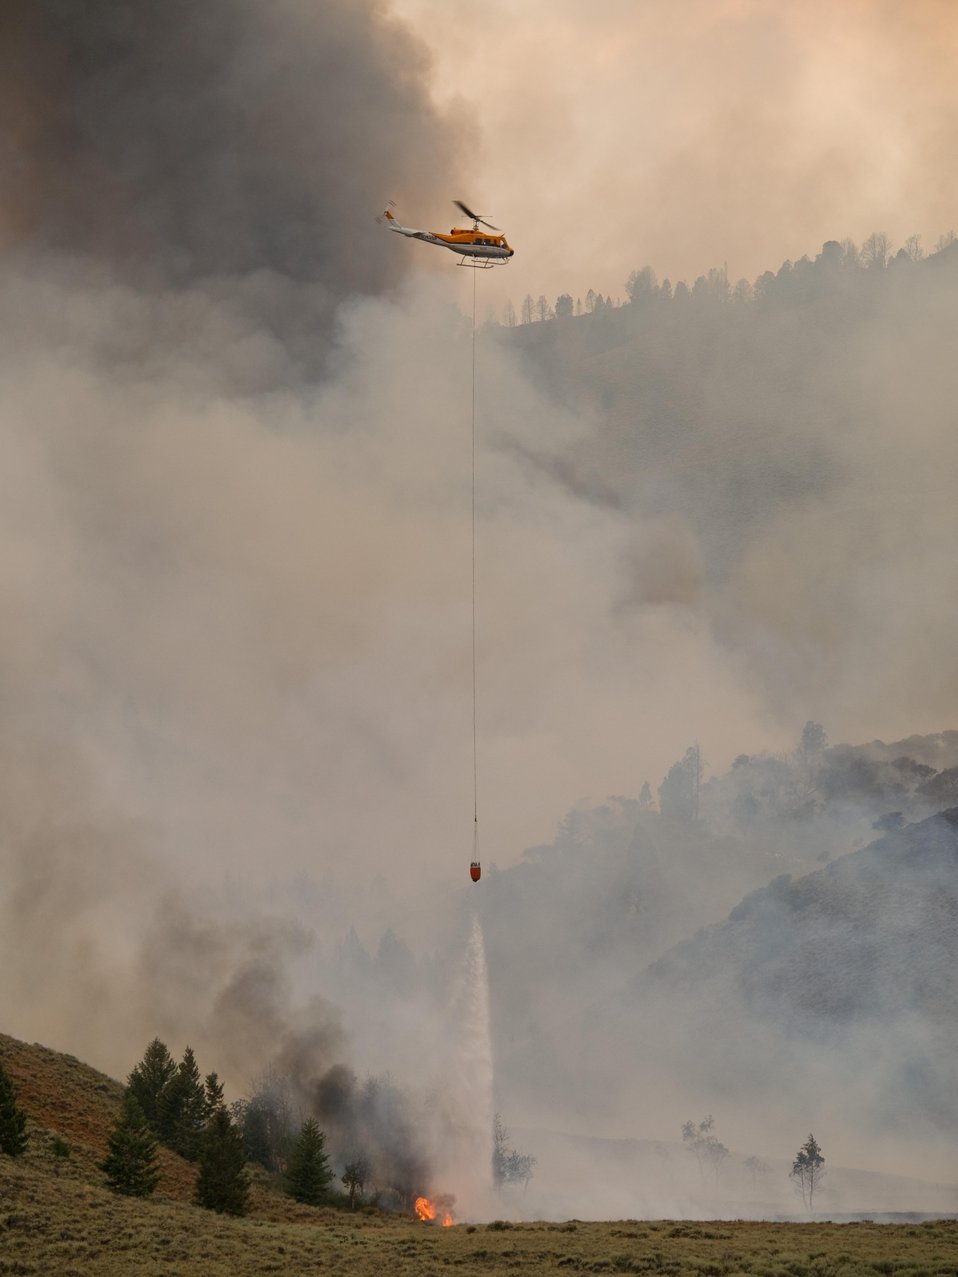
Helicopter makes water drop on the Lodgepole Fire. The Lodgepole Fire in the Salmon-Challis National Forest near Challis, ID began on Jul. 20, 2013 by lightning has consumed approximately 13,700 acres and is approximately 15% contained.